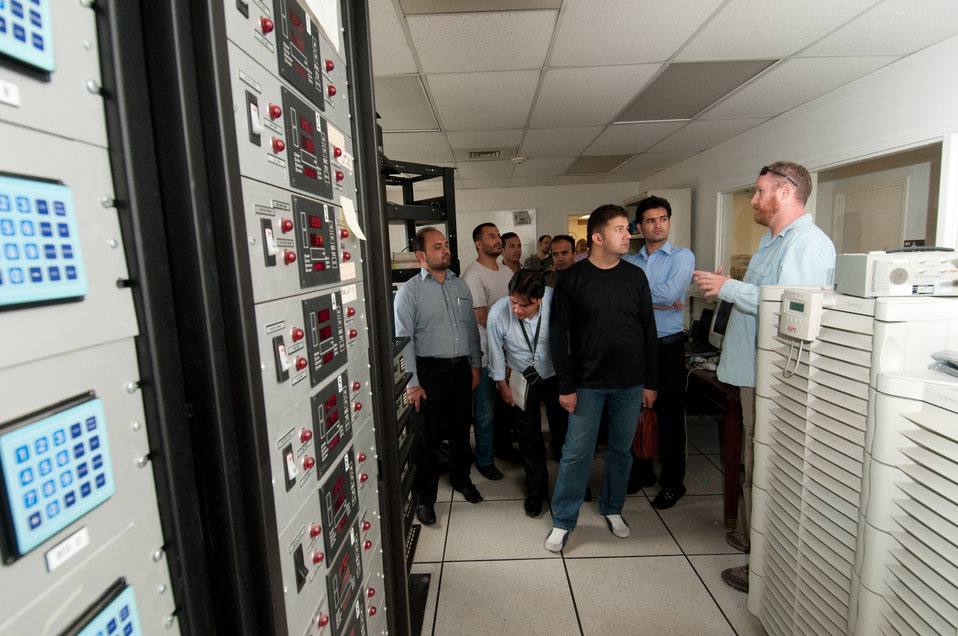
U.S. Department of Agriculture (USDA), Agriculture Research Service's Jackson Fisher (right), spoke with 12 Borlaug Fellows from Afghanistan’s Ministry of Agriculture, Irrigation and Livestock (MAIL) during their tour of the Global Climate Change Lab Data Acquisition room where information is recorded every 30 seconds from the Soil Plant Atmosphere Research (SPAR) units in Beltsville, MD, on Wednesday, September 21, 2011. SPAR units provide precise control of the major environmental variables influencing crop growth including temperature, humidity, and atmospheric carbon dioxide concentration. The SPAR units are fully automated to measure crop canopy gas exchange including photosynthesis, respiration, transpiration and water use efficiency.